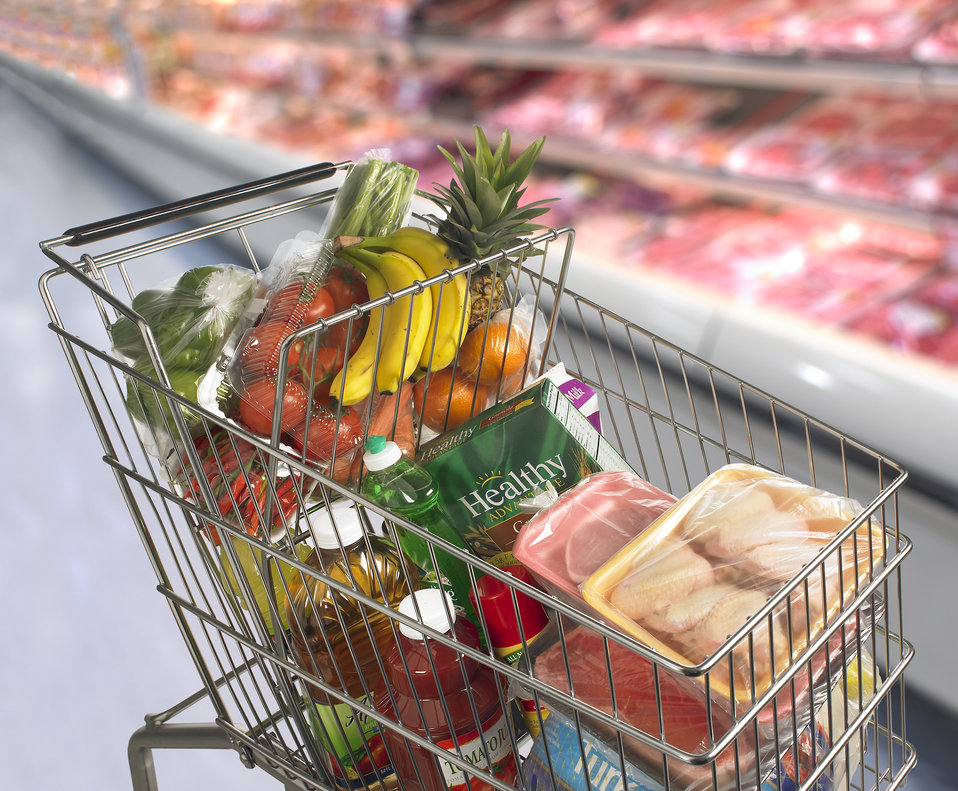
Even when shopping consumers need to be aware of cross contamination of food products. Always wrap meat and poultry products separately and immediately refrigerate all cold products upon returning home.